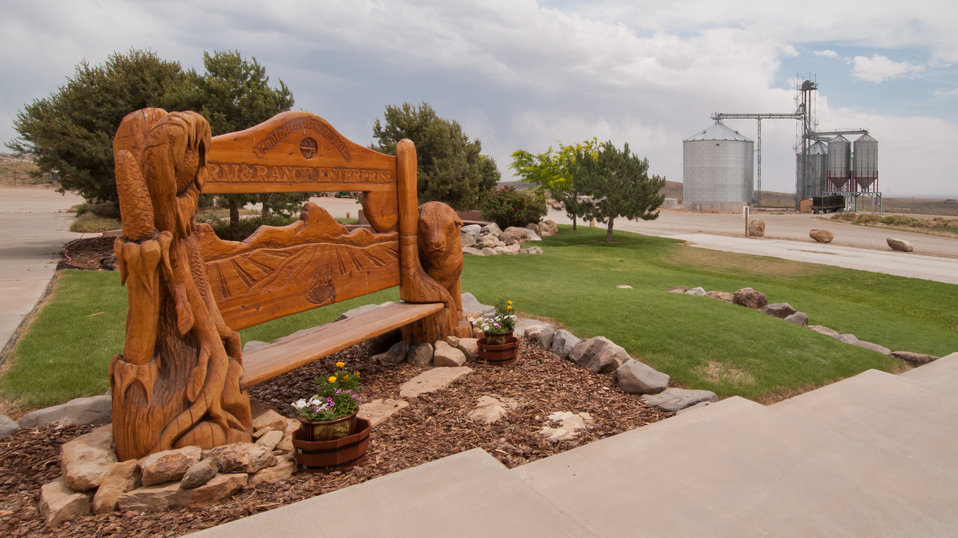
With a grant from the U.S. Department of Agriculture’s (USDA) Rural Development (RD) agency the Ute Mountain Ute Tribe Farm and Ranch Enterprise will be able to use state of the art equipment and modern technology to successfully operate a market-oriented agricultural enterprise. The farm is a 7,770 acre modern irrigated agricultural project producing alfalfa, field corn, wheat, sunflower seed and livestock in the shadow of Sleeping Ute Mountain in Towaoc, CO. The funding will also enable the tribe to maximize successful commercial ventures, develop a network of potential customers and provide skilled, year-round employment.